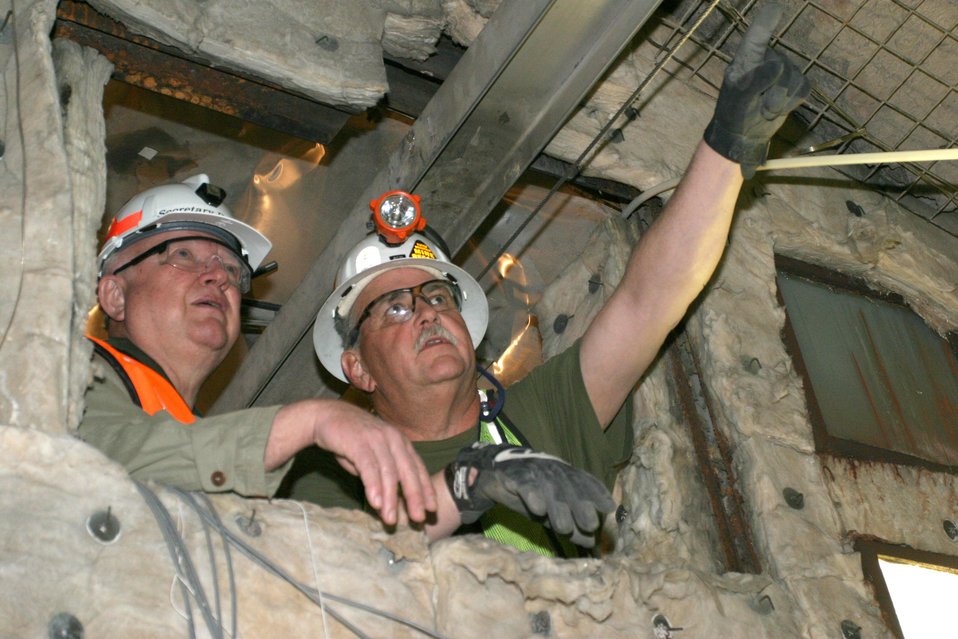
ENERGY SECRETARY SAMUEL BODMAN AND MIKE TAYLOR, YUCCA MOUNTAIN TEST COORDINATION OFFICE EMPLOYEE, TOUR THE NUCLEAR WASTE REPOSITORY SITE ON APRIL 13, 2006.

YUCCA MOUNTAIN IS LOCATED ON THE SOUTHWEST BOUNDARY OF THE NEVADA TEST SITE. IN 2002, IT WAS RECOMMENDED AS THE NATION'S FIRST LONG TERM GEOLOGICAL REPOSITORY FOR HIGH LEVEL NUCLEAR WASTE. STUDIES OF THE SITE INCLUDE: SURFACE BASED TESTING OF ROCK, SOIL SAMPLES AND WATER MOVEMENT, SUBSURFACE ROCK TESTING AT DEEP LEVELS AND LABORATORY ANALYSIS OF SAMPLES.